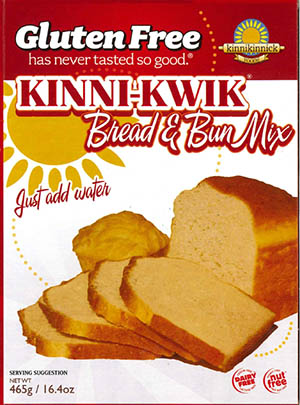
RECALLED – Waffles, Mix, Bread Crumbs

January 8, 2014 – Product Recall – Allergy Alert - Undeclared Milk in Five Kinnikinnick Foods Products.